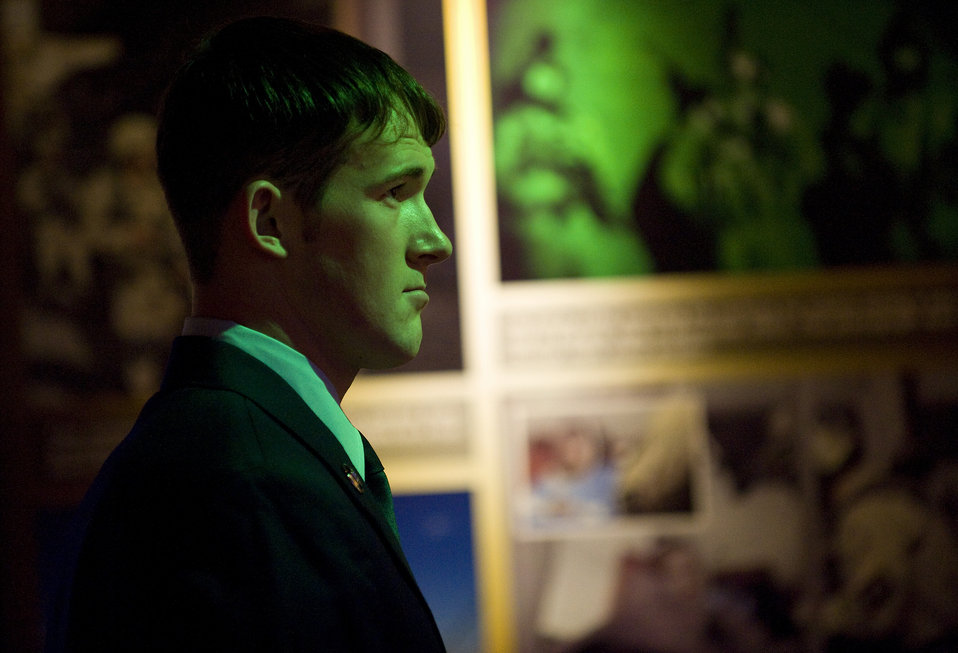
Museum opens exhibit dedicated to 'Warrior Airmen'

Senior Airman Harry Bromley reads about the members of his unit who gave their lives during the war on terrorism at the opening of the Warrior Airmen Exhibit Jan. 12 at the National Museum of the U.S. Air Force at Wright-Patterson Air Force Base, Ohio. Airman Bromley is a pararescuman from the 123rd Special Tactics Squadron.